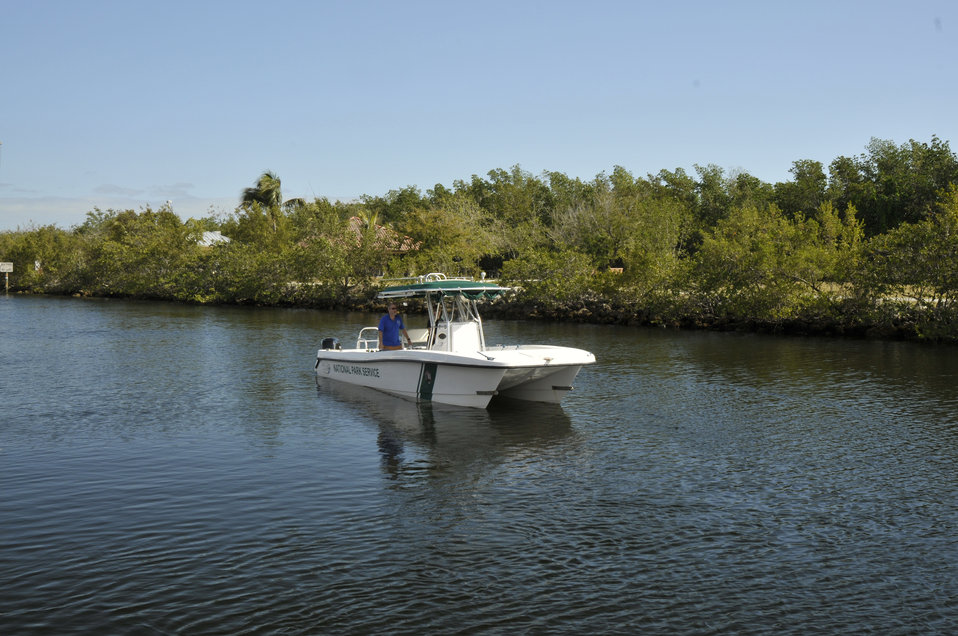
An Interior Department National Park Service (NPS) boat scans the Biscayne Bay National Park, in southern Florida on April 5, 2010 for invasive species of fish and plants. NPS works closely with the U.S. Department of Agriculture (USDA) Forest Service (FS) in the containment and eradication of invasive species A species is considered invasive it is nonnative to the ecosystem and its introduction causes or is likely to cause economic or environmental harm or harm to human health. The goal of the U.S. Department of Agriculture’s (USDA) Forest Service (FS) invasive species program is to reduce, minimize, or eliminate the potential for introduction, establishment, spread, and impact of invasive species across all landscapes and ownerships.